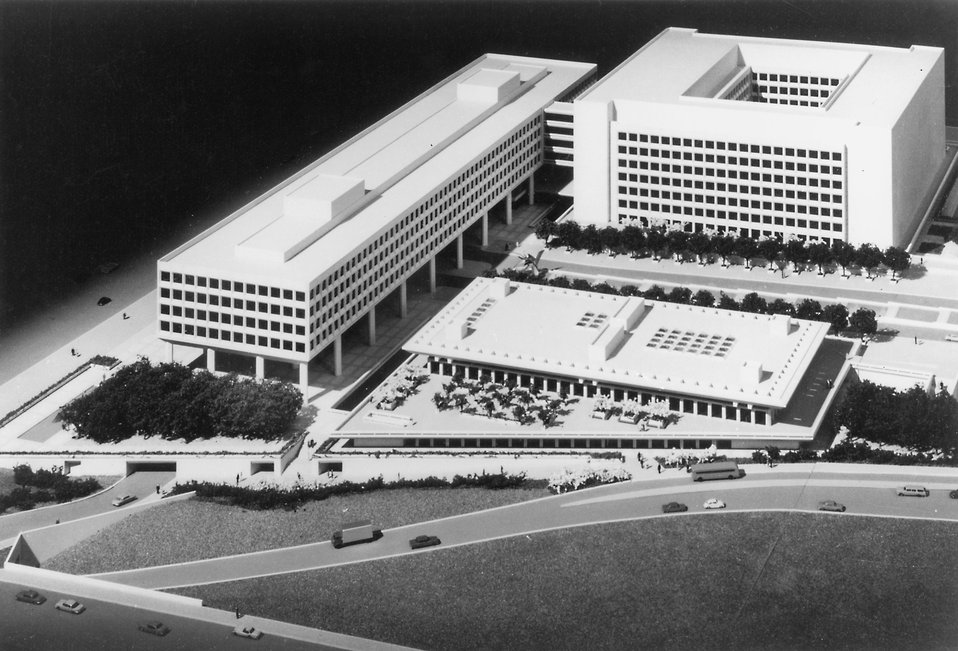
Federal Office building No. 5 Washington DC